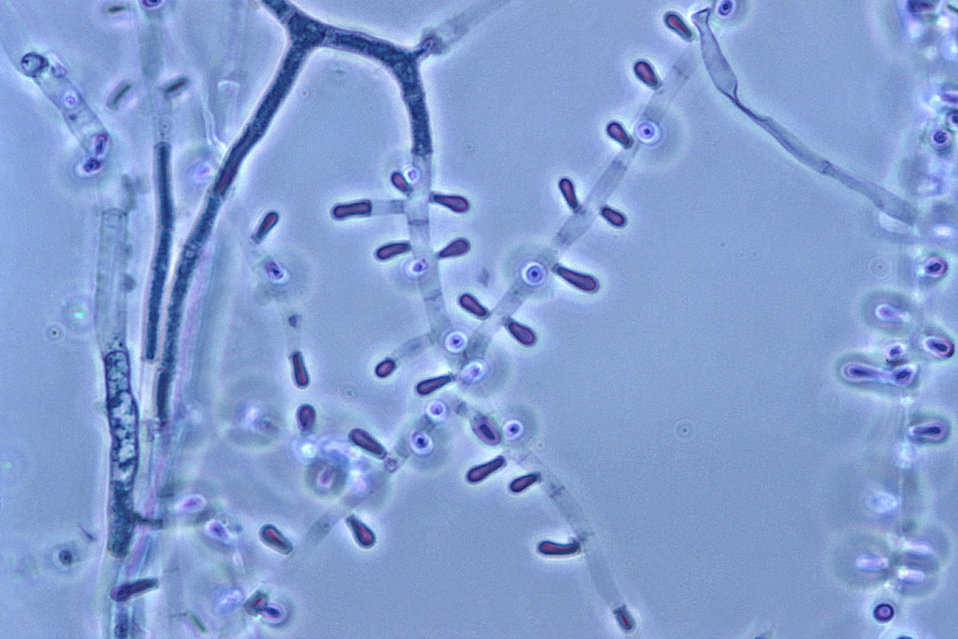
Magnified 1000X, this photomicrograph revealed some of the ultrastructural morphology exhibited by this dermatophytic fungus, Trichophyton soudanense. Of particular interest in this image are the macroconidia that were budding from the multiseptate conidiophores.